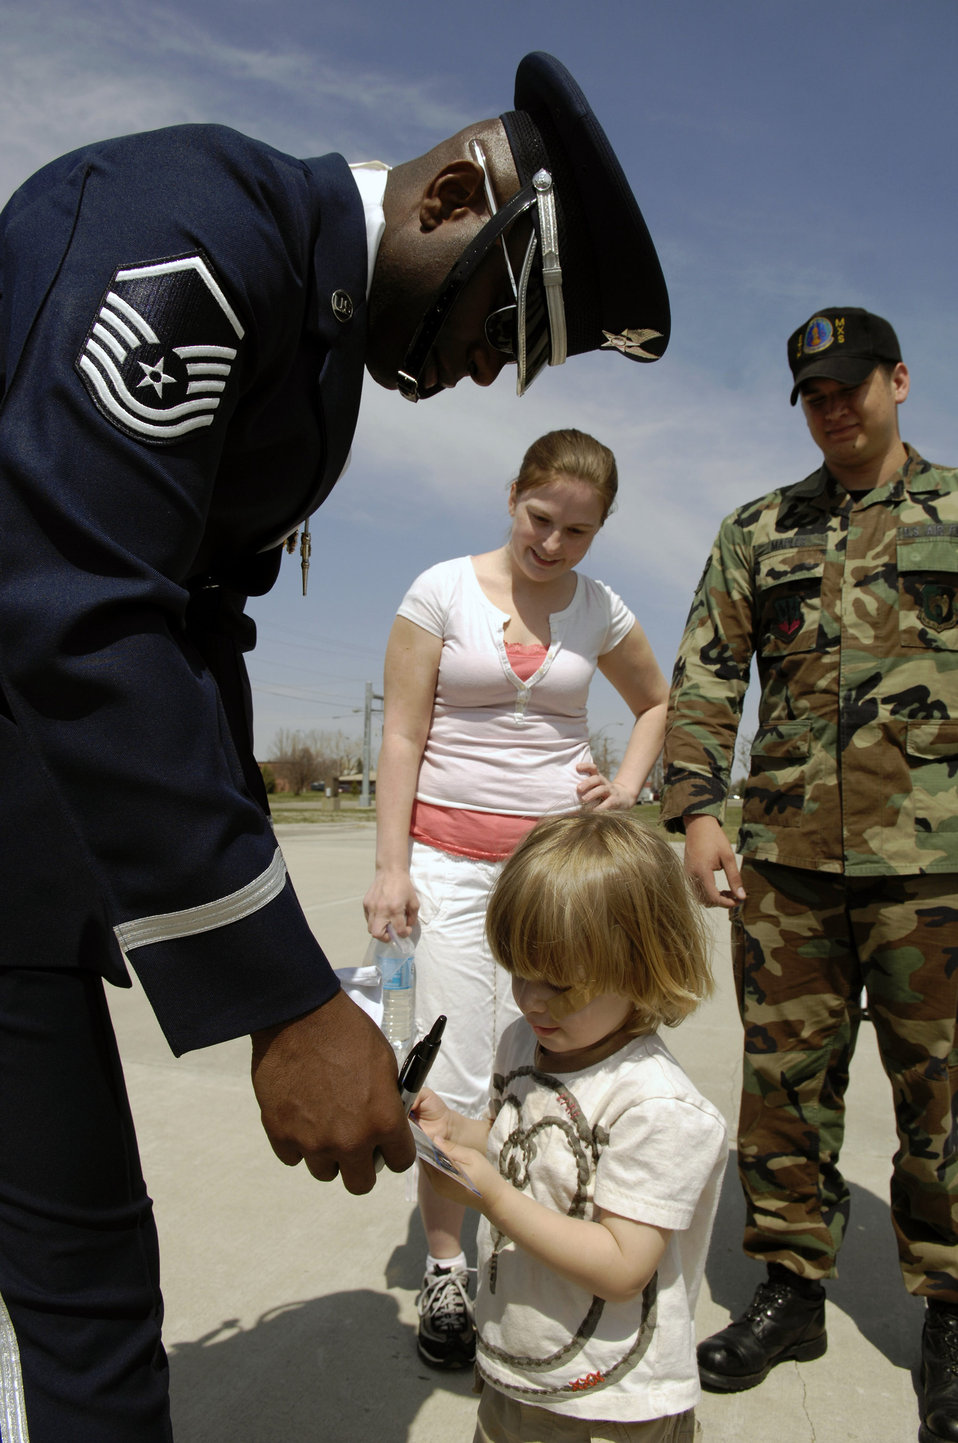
Drill team provides northern exposure for Air Force

Master Sgt. Steven West writes a message for a child May 8 following the Air Force Honor Guard Drill Team's performance at Minot Air Force Base, N.D. The drill team is the traveling component of the Air Force Honor Guard and tours world-wide representing all Airmen and showcasing Air Force precision to recruit, retain and inspire for the Air Force mission. Sergeant West is the drill team superintendent.